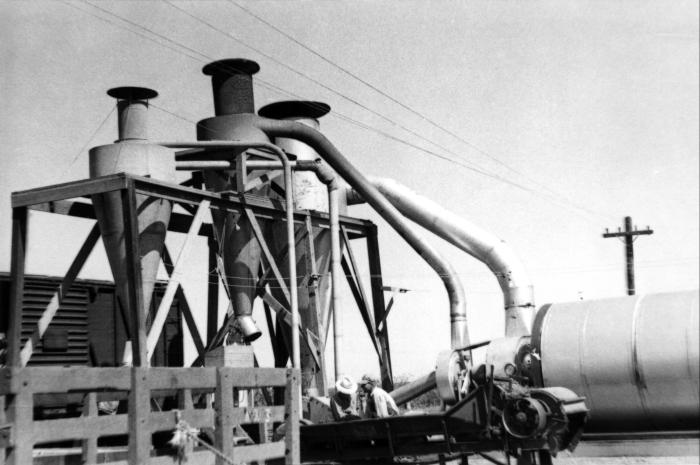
This 1947 historical photograph was provided by the Center for Disease Control's (CDC), National Institute for Occupational Safety and Health (NIOSH). The image showed two men who were overseeing the operation of an onsite agricultural drying machine, the containment vessels, and ductwork of which could be seen in the background, on this Kansas farm. This image was part of a collection that was used to document the many aspects of various industrial activities, so as to better understand these workplace environments, and their associated hazards. In gaining a better understanding of workplace hazards, protocol-formulating bodies such as NIOSH, are better able to create a safer workplace through substantiation of appropriate safety regulations.